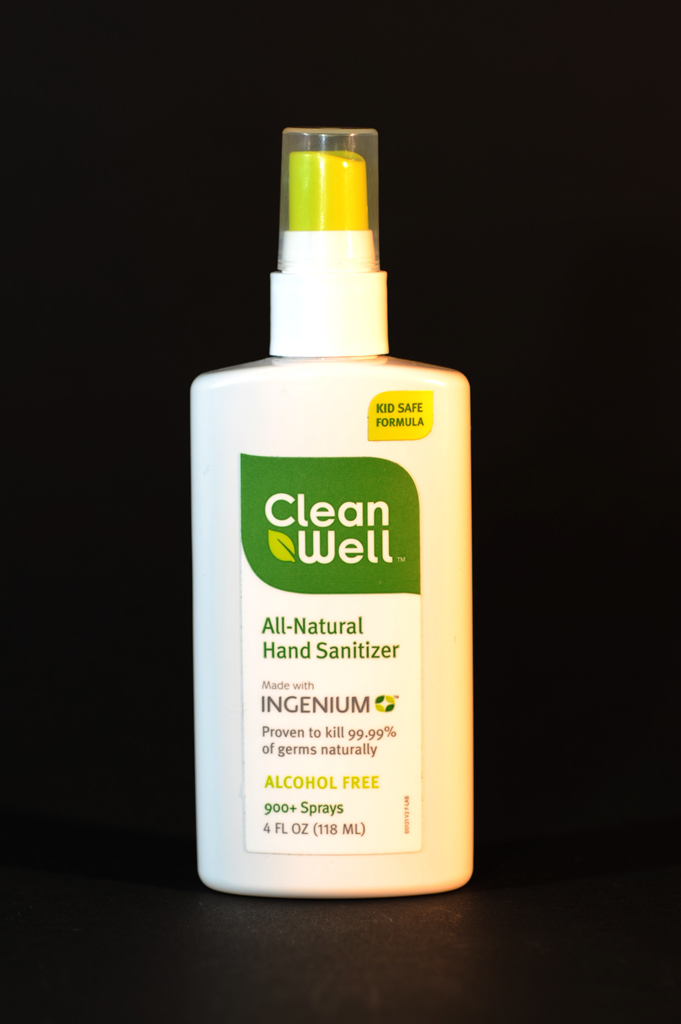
Hand Sanitizers Carry Unproven Claims to Prevent MRSA Infections - Product Photo

The claims on this product that it prevents serious infections violate federal regulations, says FDA. The agency has warned the company to correct the violations or risk being subject to legal action. Read this FDA Consumer Update: www.fda.gov/ForConsumers/ConsumerUpdates/ucm251816.htm